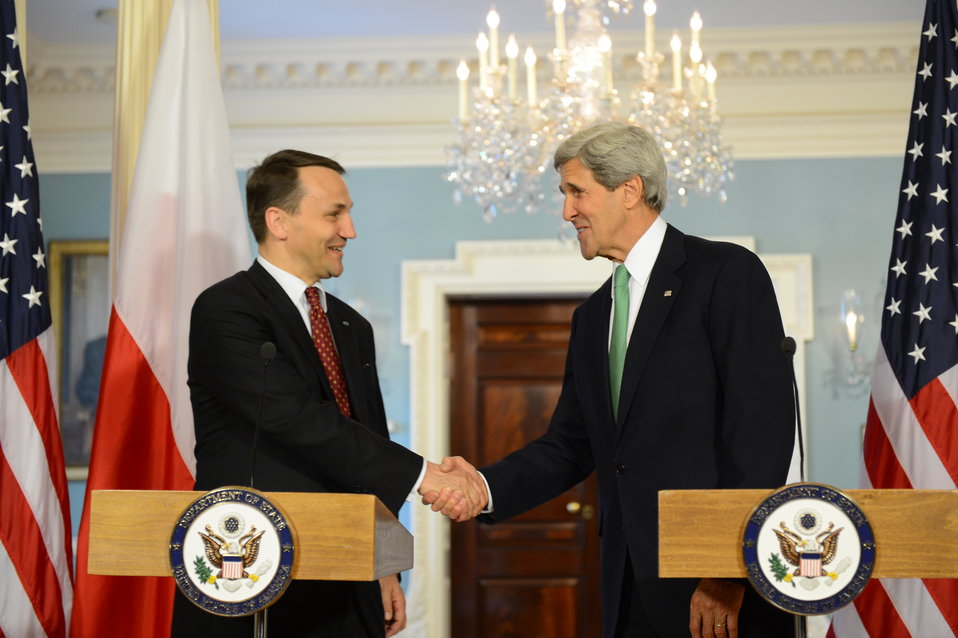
Secretary Kerry Delivers Remarks With Polish Foreign Minister Sikorski

U.S. Secretary of State John Kerry delivers remarks with Polish Foreign Minister Radoslaw Sikorski at the U.S. Department of State in Washington, D.C., on June 3, 2013.